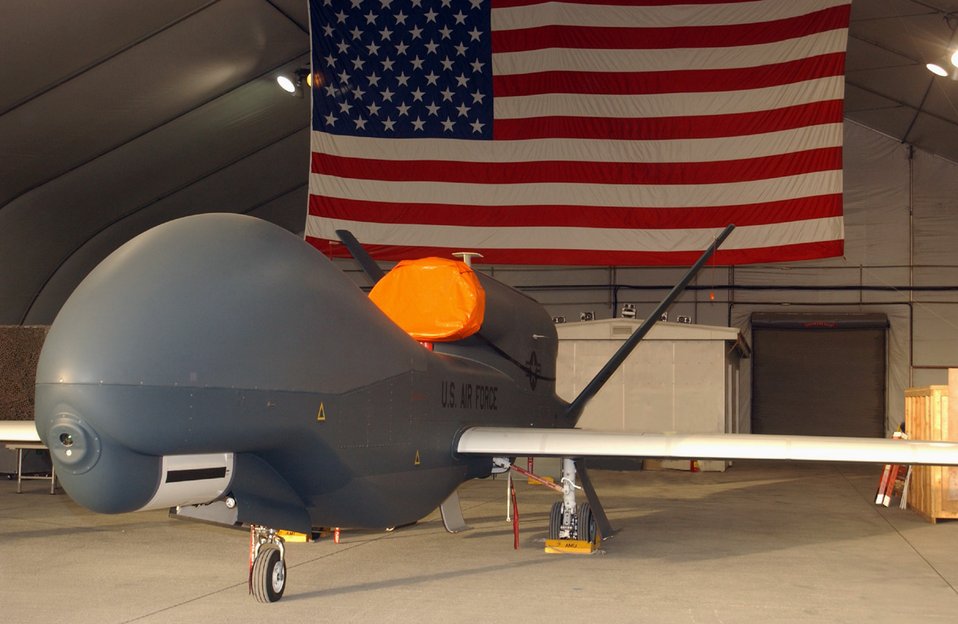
Global Hawk operations reach new high

The Global Hawk has proven its worth in recent operations, surveying large geographic areas with pinpoint accuracy and giving military commanders near real-time information.